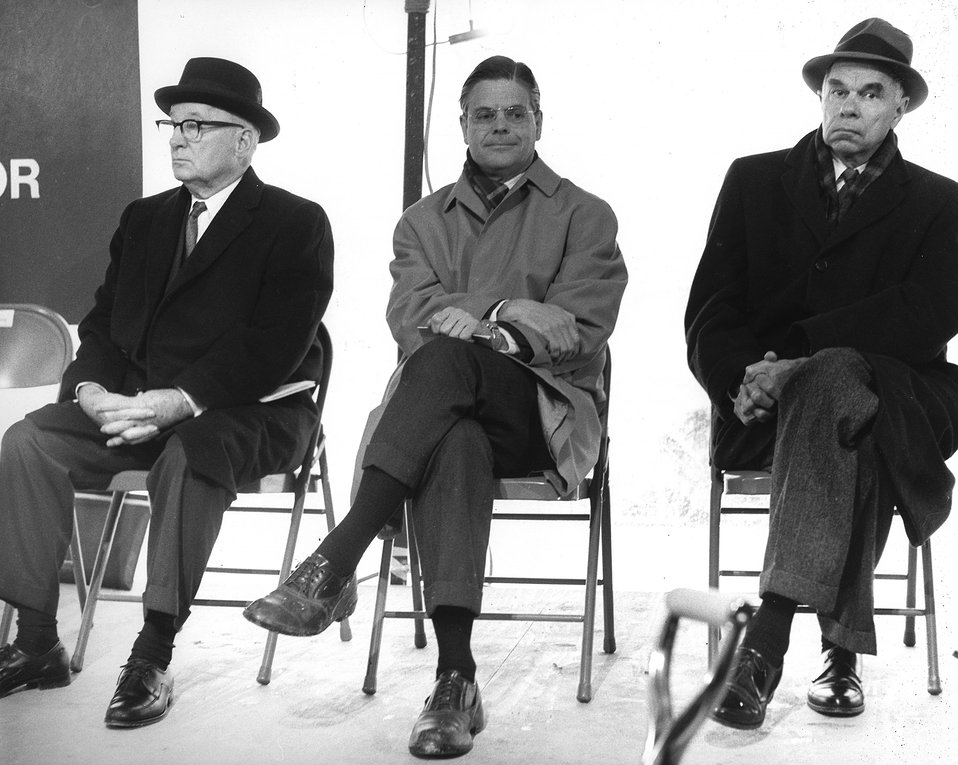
On the speakers platform: James Ramey, Commissioner, AEC, The Hon. Melvin H. Price, Member of Congress from Illinois and Member of the Joint Congressional Committee on Atomic Energy; and Robert Wilson, Director, National Accelerator Lab.